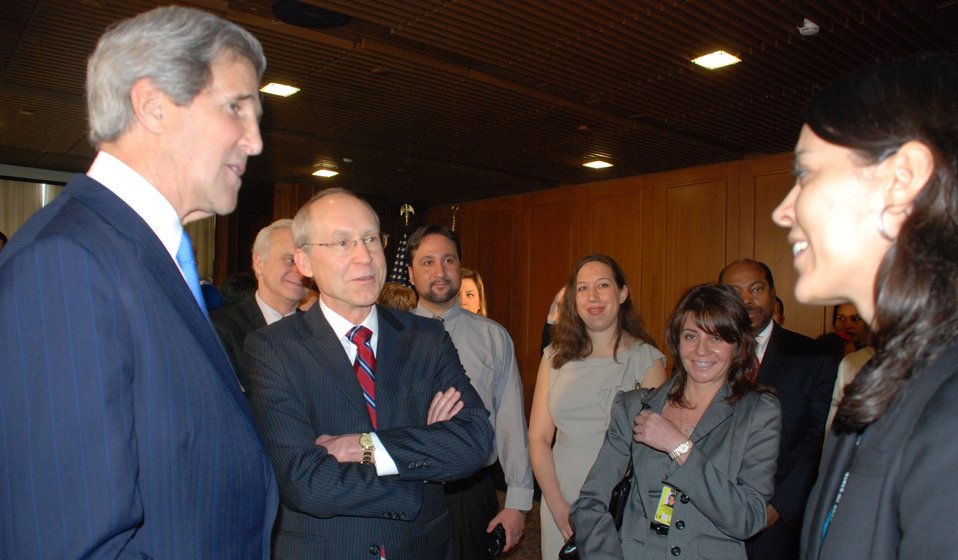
Secretary Kerry Meets With U.S. Mission Turkey Staff and Families

U.S. Secretary of State John Kerry meets with the staff and families of the U.S. Mission to Turkey in Istanbul, Turkey, April 7, 2013.